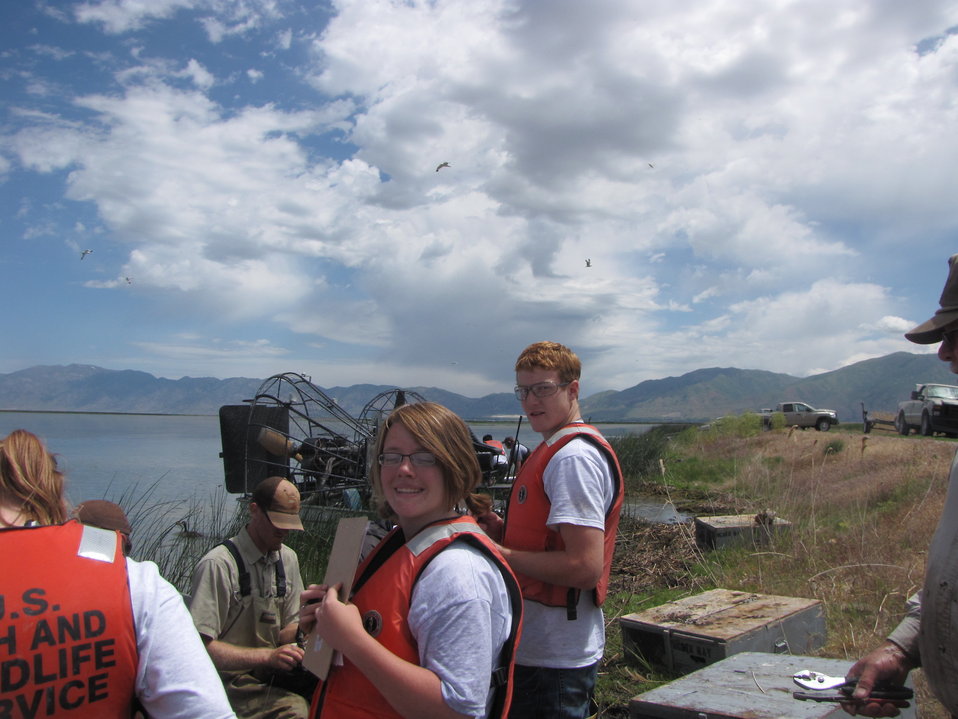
YCC crew helping with bird banding

Youth Conservation Corps assist the Utah Department of Natural Resources with Canada Goose banding project. They recorded data about the birds and learned how to identify gender.